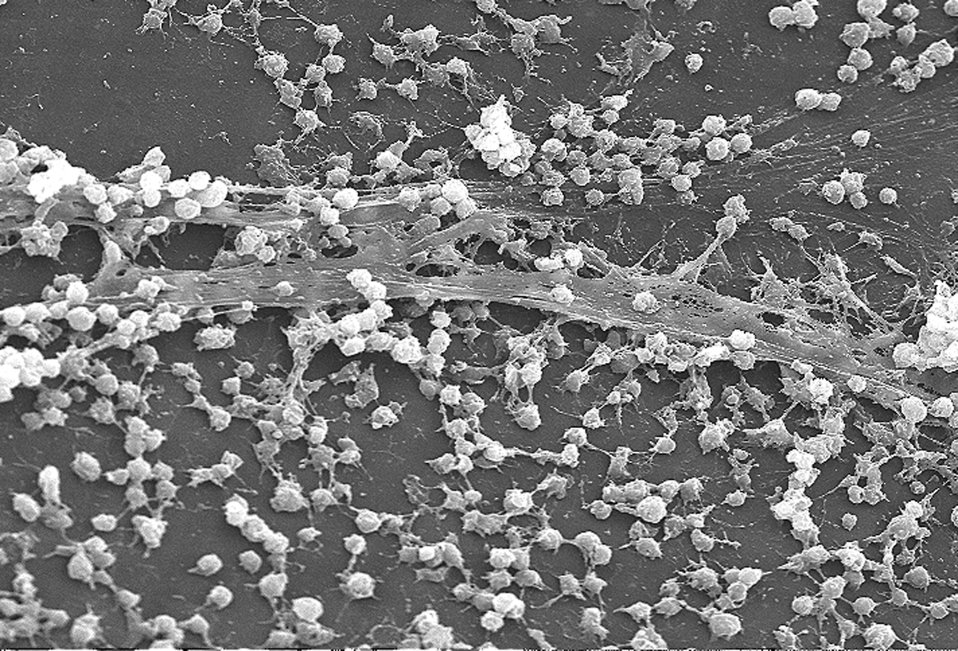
This electron micrograph depicted the biofilm formation found inside the lumen of an indwelling catheter being secreted by Staphylococcus aureus bacteria. The biofilm secretions are primarily composed of polysaccharides, and by covering the bacteria, render the bacteria resistant to attacks they may face from antimicrobial agents. S. aureus, often referred to simply as "staph," are bacteria commonly carried on the skin, or in the nose of healthy people. Approximately 25% to 30% of the population is colonized, i.e., when bacteria are present, but not causing an infection, in the nose with staph bacteria.